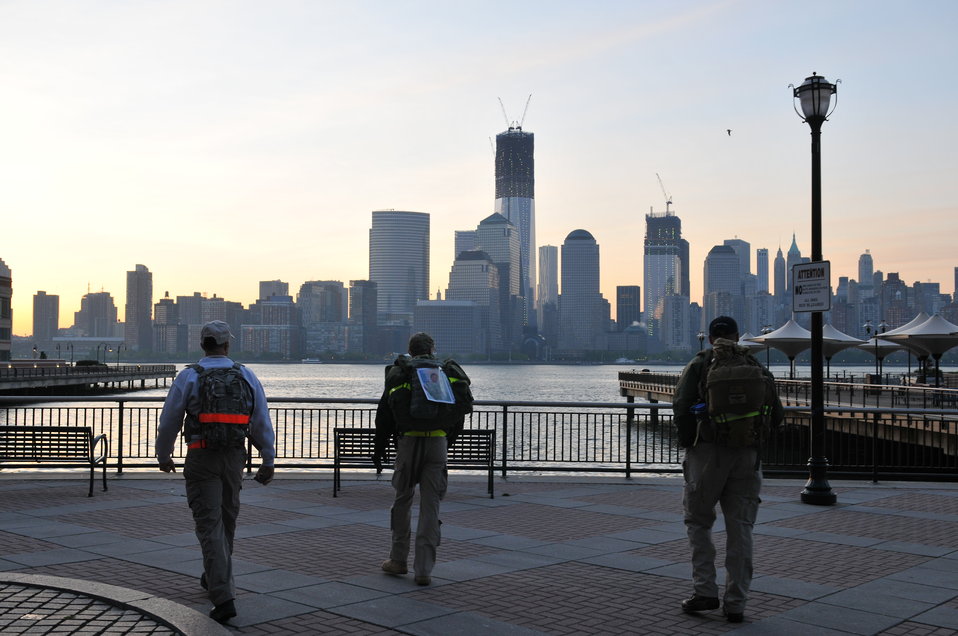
Airmen remember fallen air advisors

Team 1 of the Air Advisor Memorial Ruck March make their way to the new One World Trade Center in New York City on April 26, 2012. The One World Trade Center was the starting point of the ruck march, which was in honor of the nine air advisors who were killed April 27, 2011, in Kabul, Afghanistan.